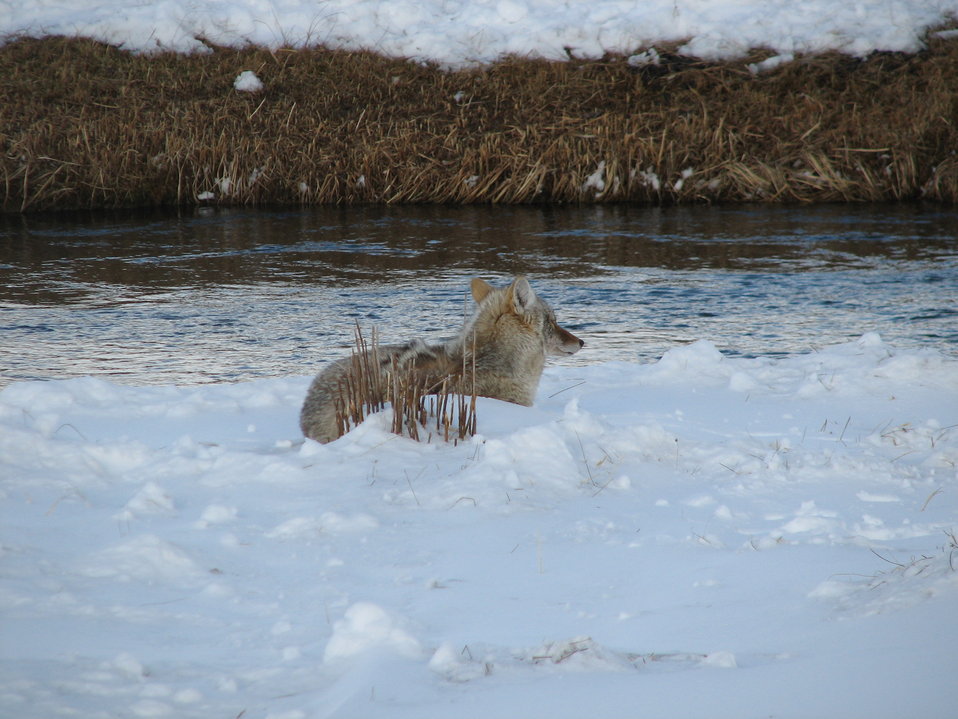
A Creekside Rest

A coyote keeps watch along the bank of Flat Creek.